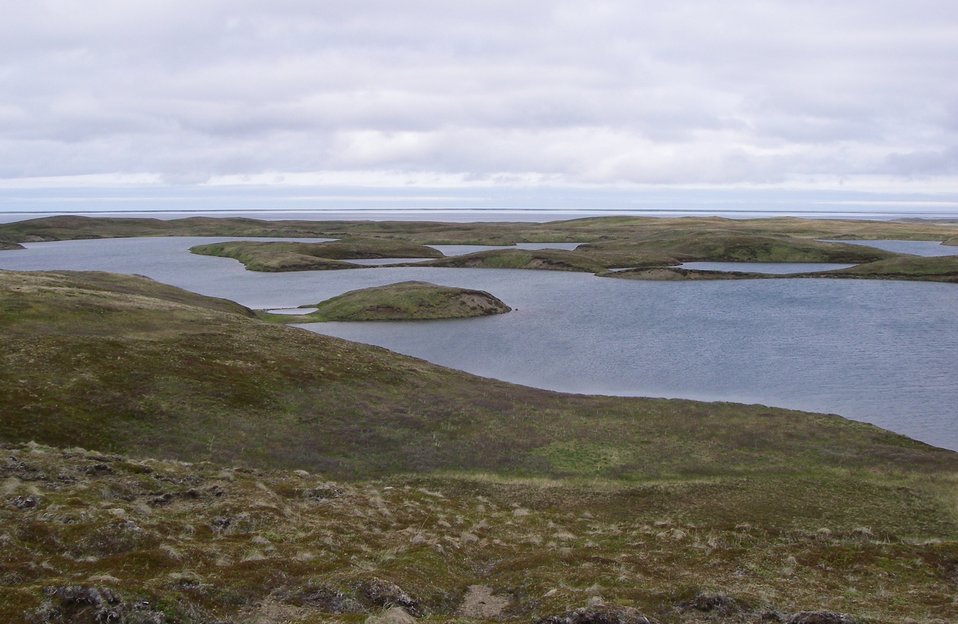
Izembek Wilderness

Wilderness north of Kinzarof Lagoon, Izembek National Wildlife Refuge
Photo by Kristine Sowl,
USFWS, Public Domain